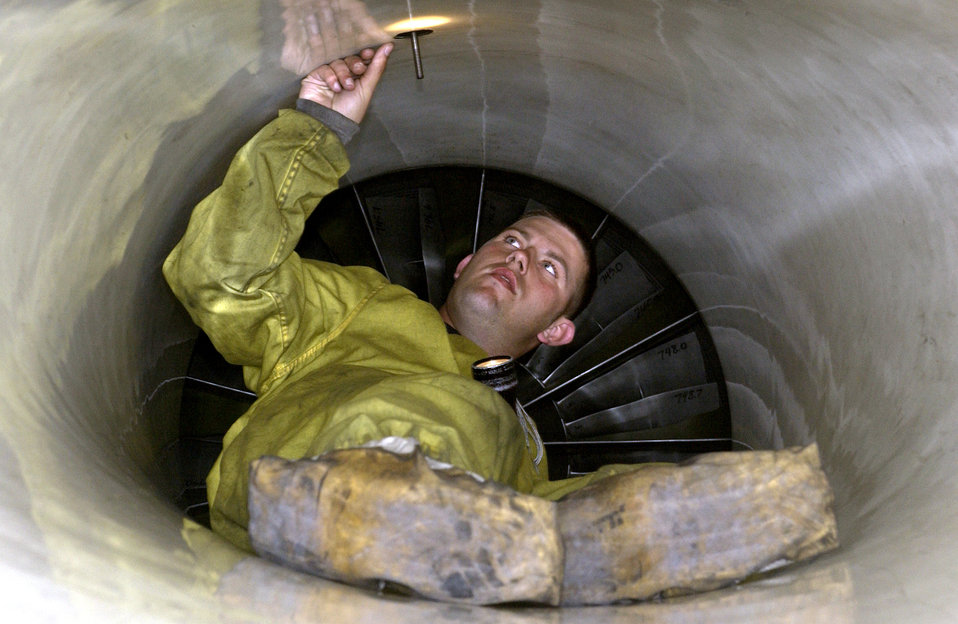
Flying the flag

NELLIS AIR FORCE BASE, Nev. -- Senior Airman James Holder performs an intake inspection on an F-16 Fighting Falcon after a Joint Red Flag 2005 exercise mission here March 24. About 10,000 U.S. and coalition forces are participating in the exercise, which runs through April 2. Airman Holder is a crew chief from the 27th Aircraft Maintenance Squadron at Cannon Air Force Base, N.M.